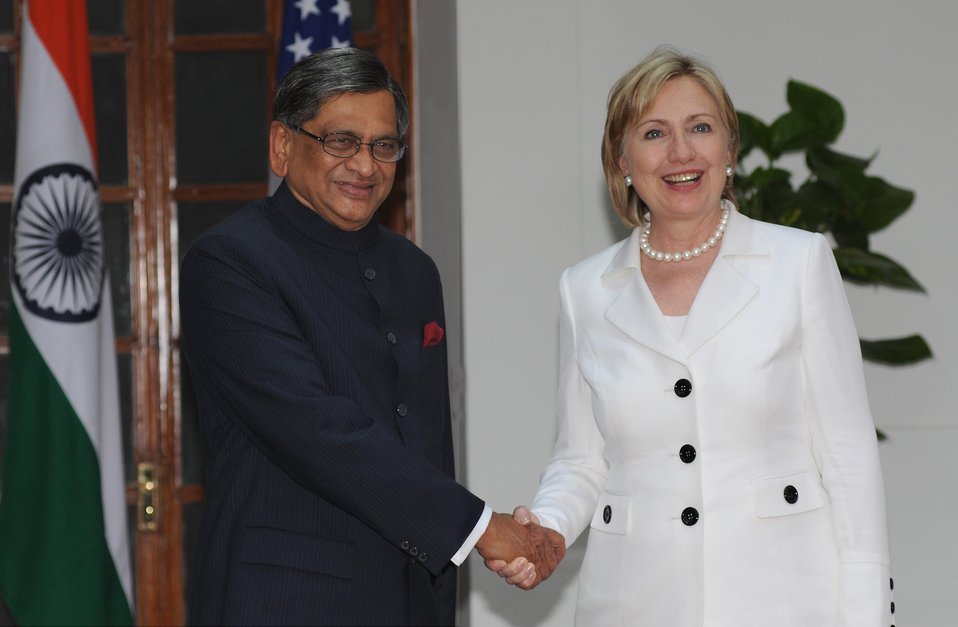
U.S., India Sign Bilateral Science and Technology Endowment Agreement

U.S. Secretary of State Hillary Rodham Clinton and Indian Minister of External Affairs S.M. Krishna after signing of a U.S.-India bilateral science and technology endowment agreement in New Delhi, India July 20, 2009.